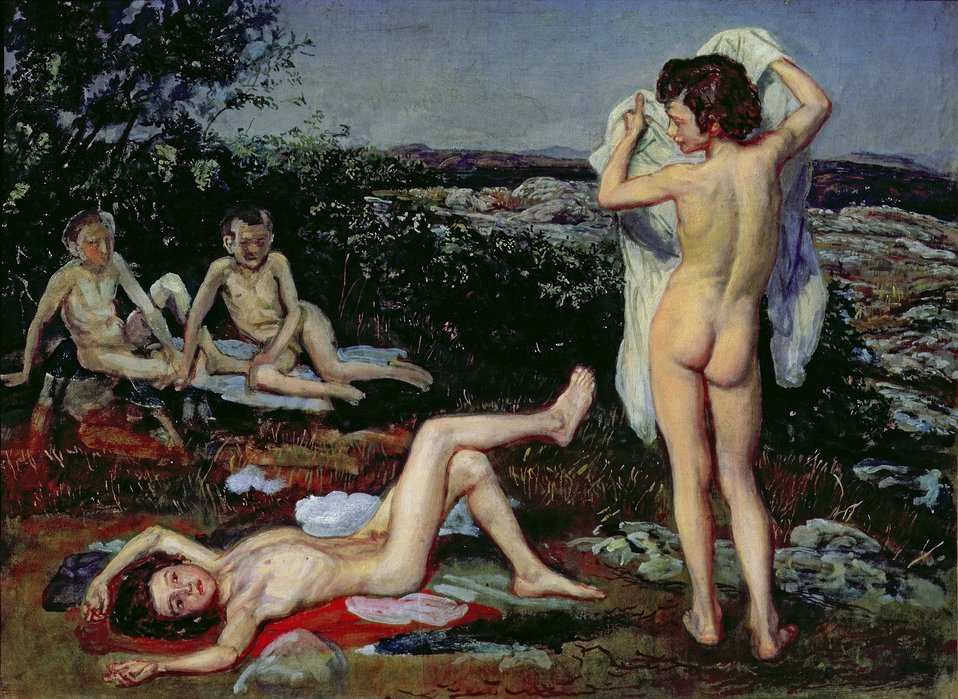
Александр А.Иванов - Четыре нагих мальчик